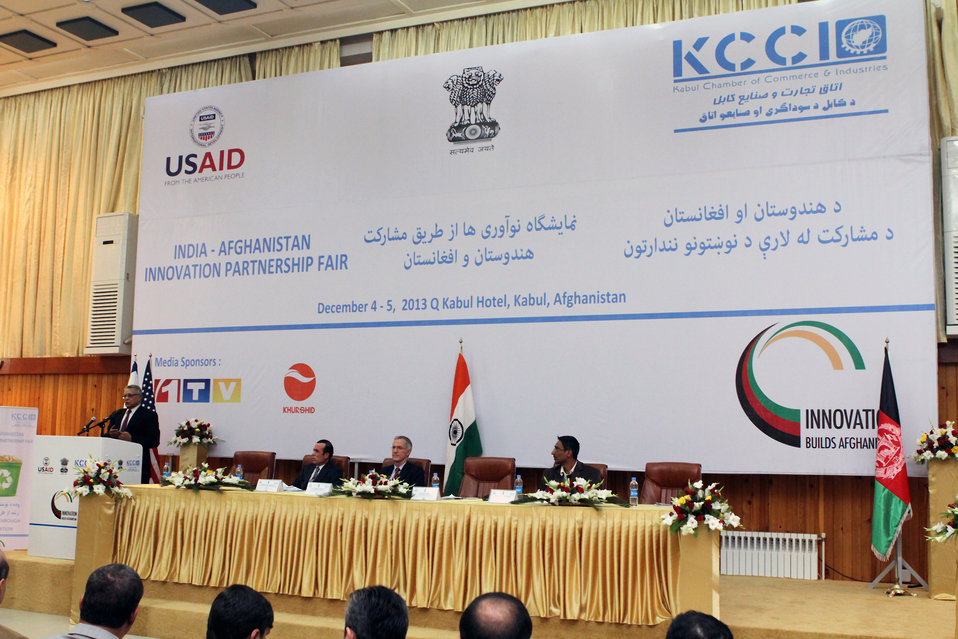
Indian Ambassador to Afghanistan Amar Sinha in India-Afghanistan Innovation Partnership Fair in Kabul.